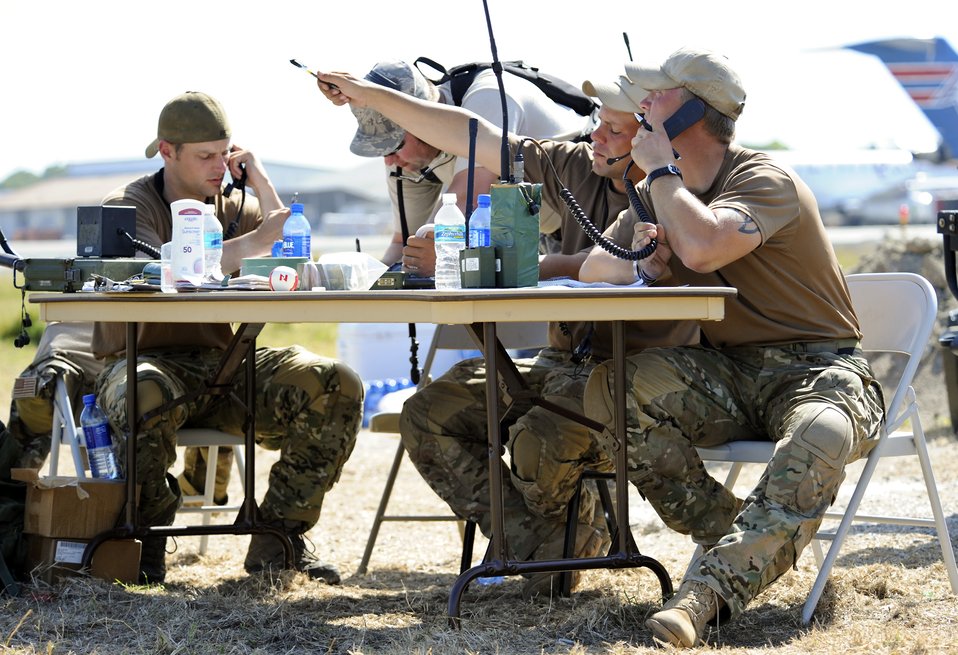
Combat controllers from the 23rd Special Tactics Squadron at Hurlburt Field, Fla., talk to aircraft circling the Toussaint L'Ouverture International Airport in Port-au-Prince, Haiti, Jan. 23, 2010. In the initial days of Operation Unified Response air operations were similar to the Berlin Airlift with aircraft landing every five minutes. Now, aircraft from all over the world are still flying in and out to drop off humanitarian aid and transport people out of the Haiti.